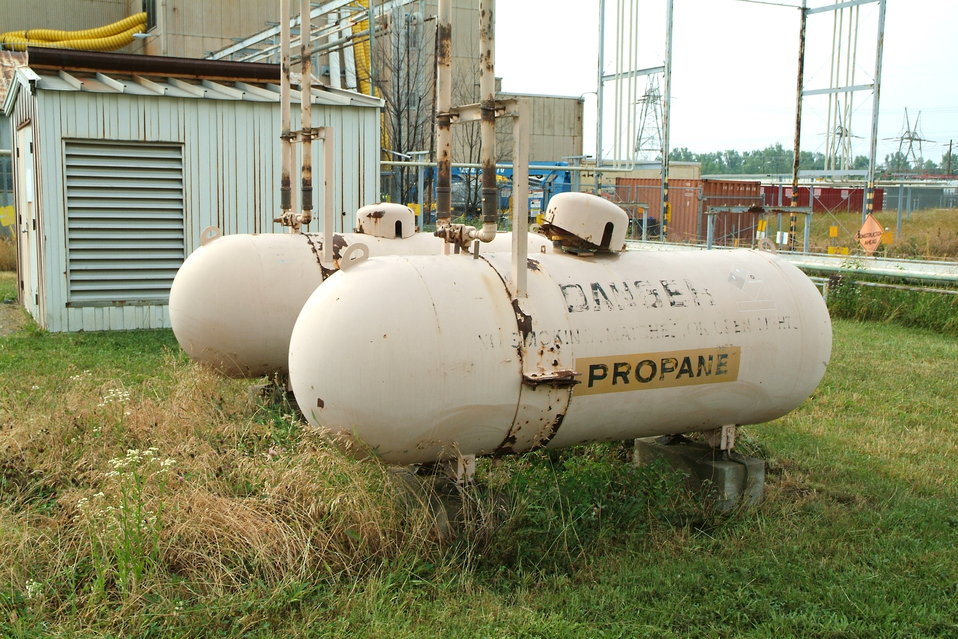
Power structure before

Recovery Act work conducted at the Paducah site.